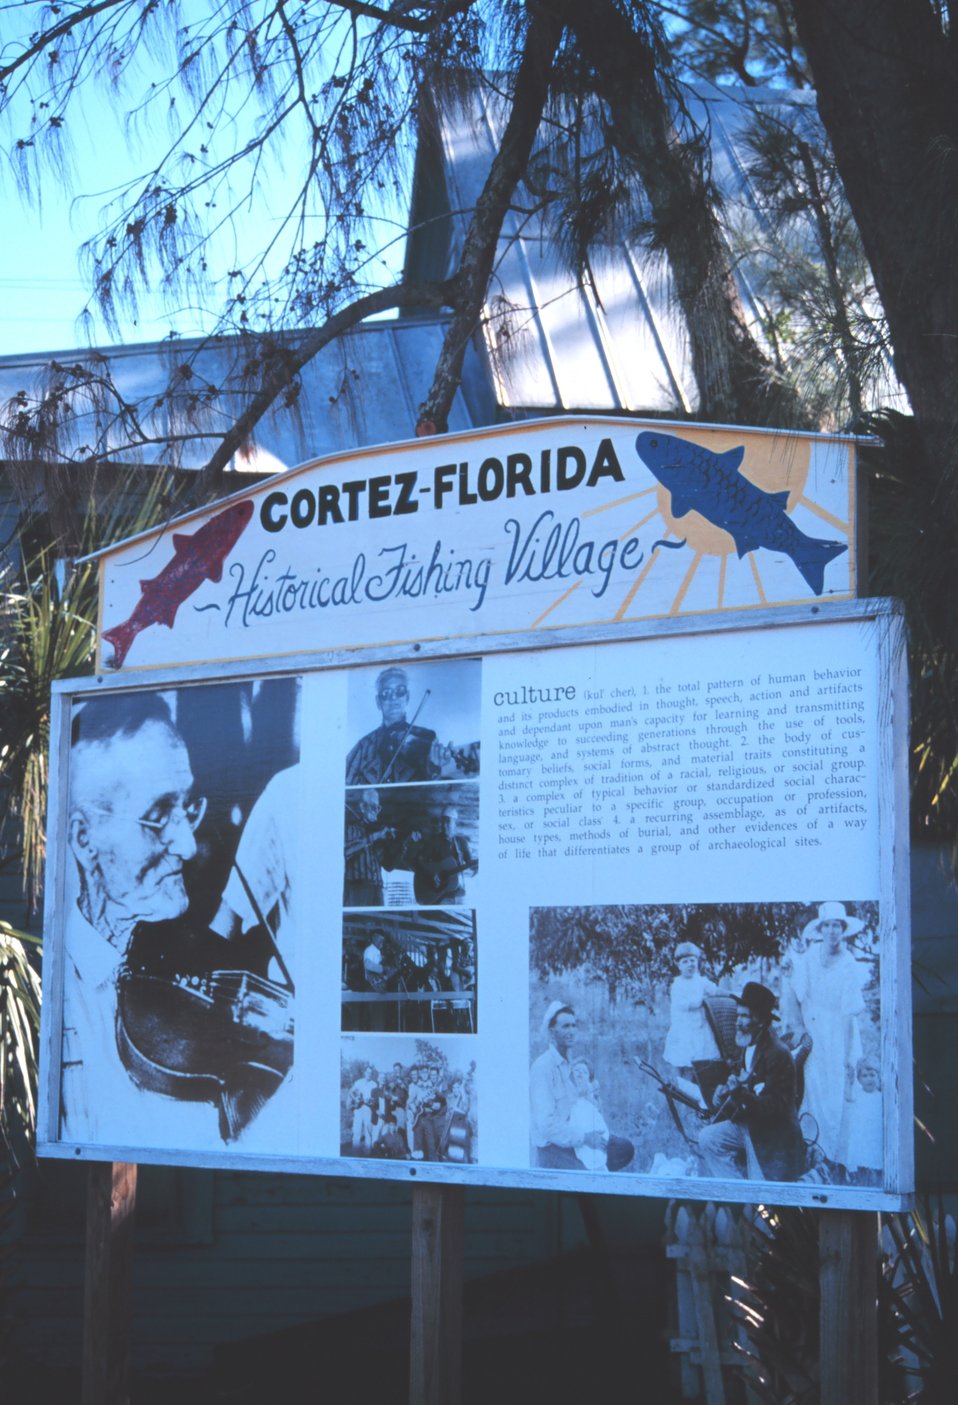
The historic fishing village of Cortez